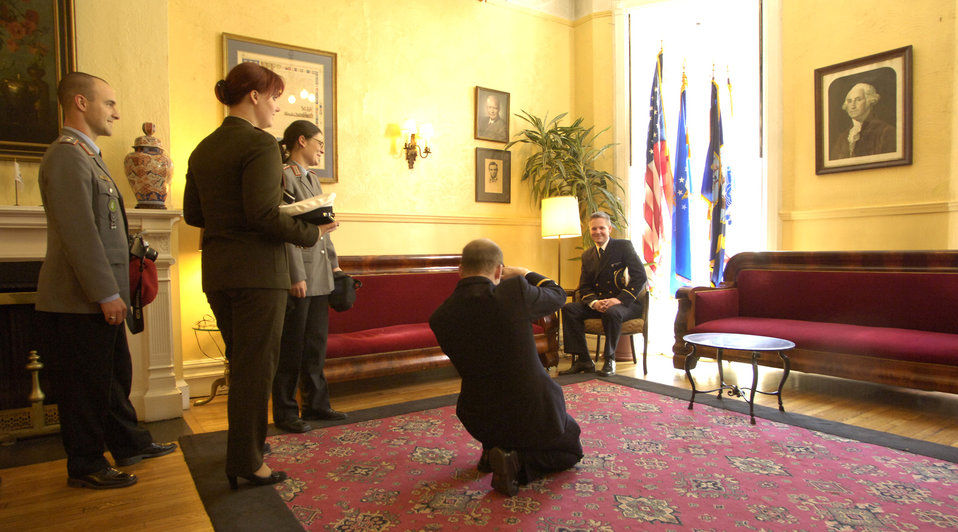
Manhattan's cheapest lodging for 'Those Who Serve'

German and Latvian servicememembers in town for a United Nations conference stop by to see the Soldiers', Sailors', Marines' and Airmen's Club in Manhattan. Ensign Matthias Dreschler poses for a photo.